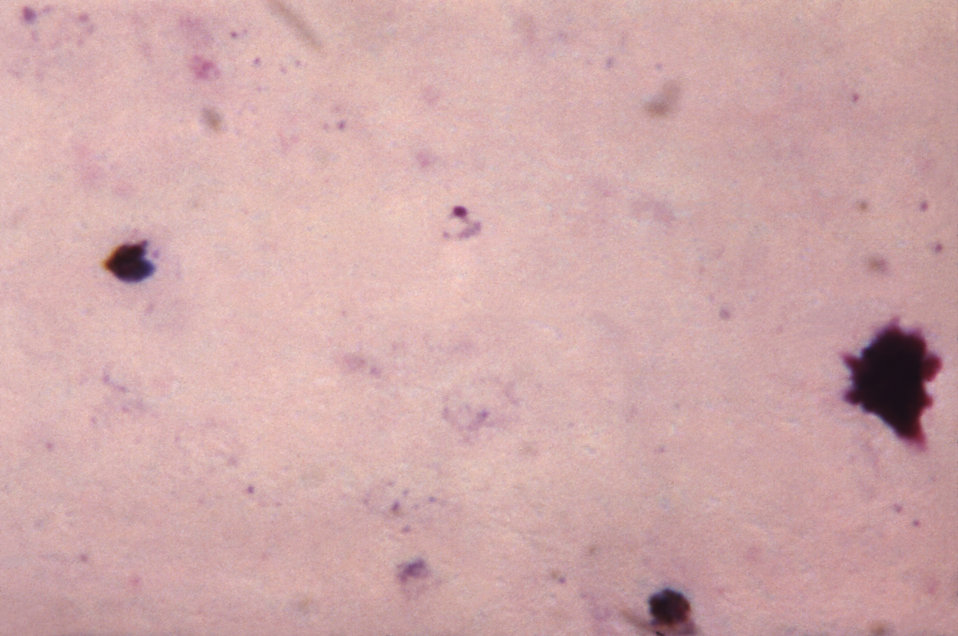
This thick film specimen reveals a young growing P. malariae trophozoite.